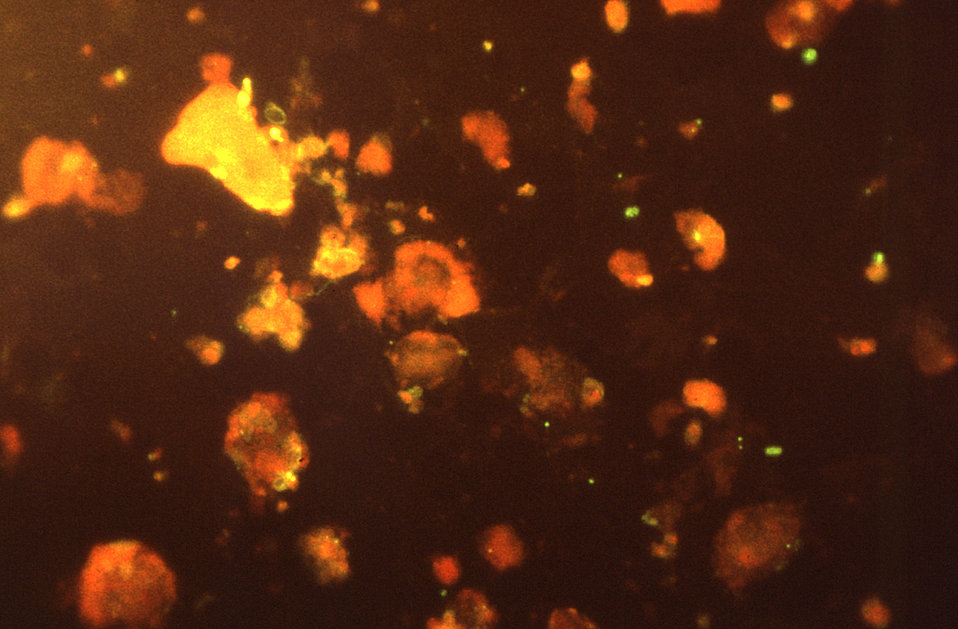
Magnified 560X, this photomicrograph showed the presence of Pneumocystis jirovecii, formerly known as Pneumocystis carinii fungal organisms using an Indirect Fluorescent Antibody test.